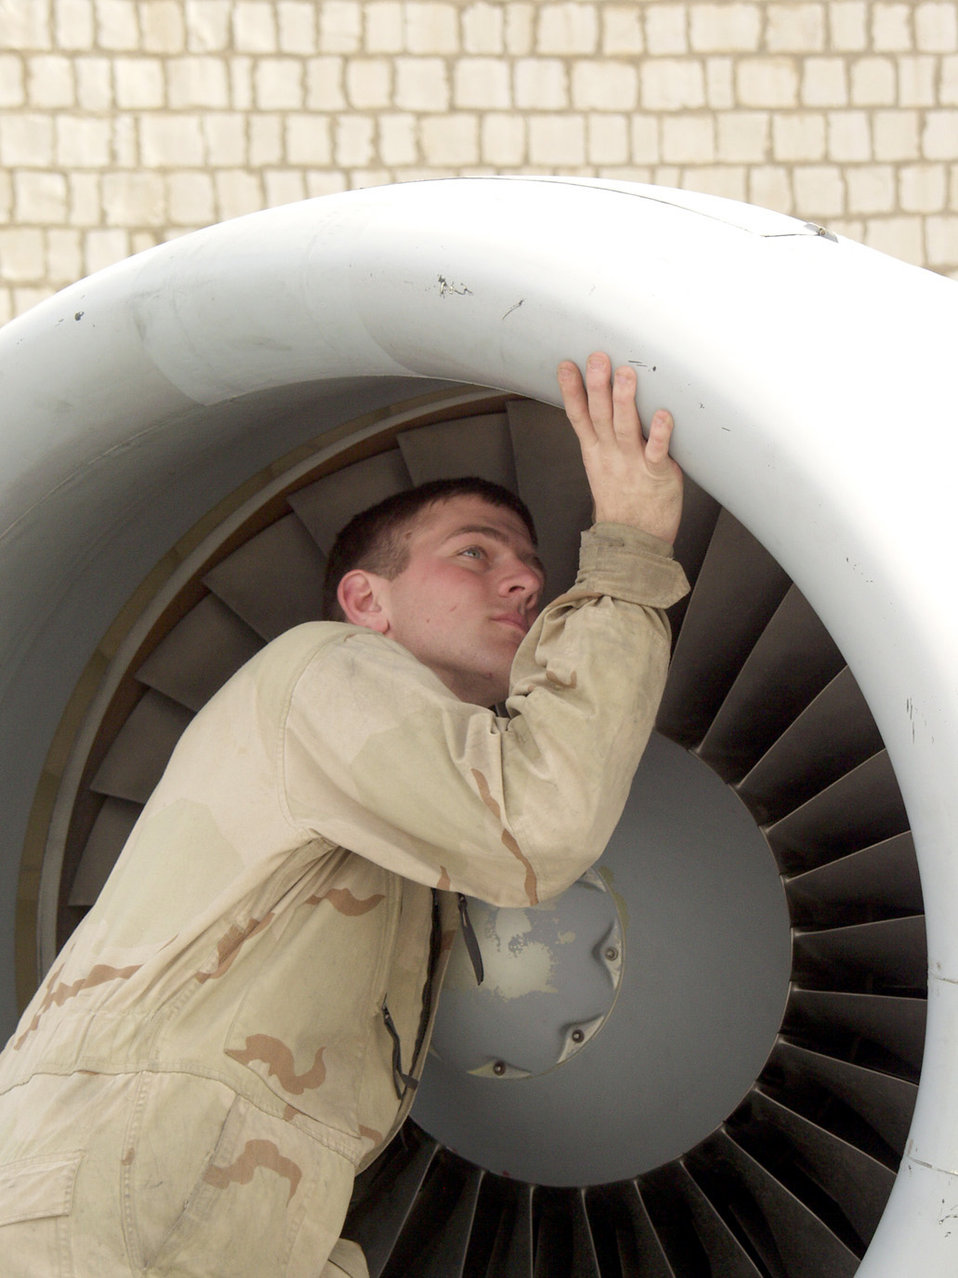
Crew chiefs keep A-10s flying

KIRKUK AIR BASE, Iraq -- Senior Airman Scott Klusman inspects an engine on an A-10 Thunderbolt II here. He is a crew chief assigned to the 355th Expeditionary Aircraft Maintenance Squadron.